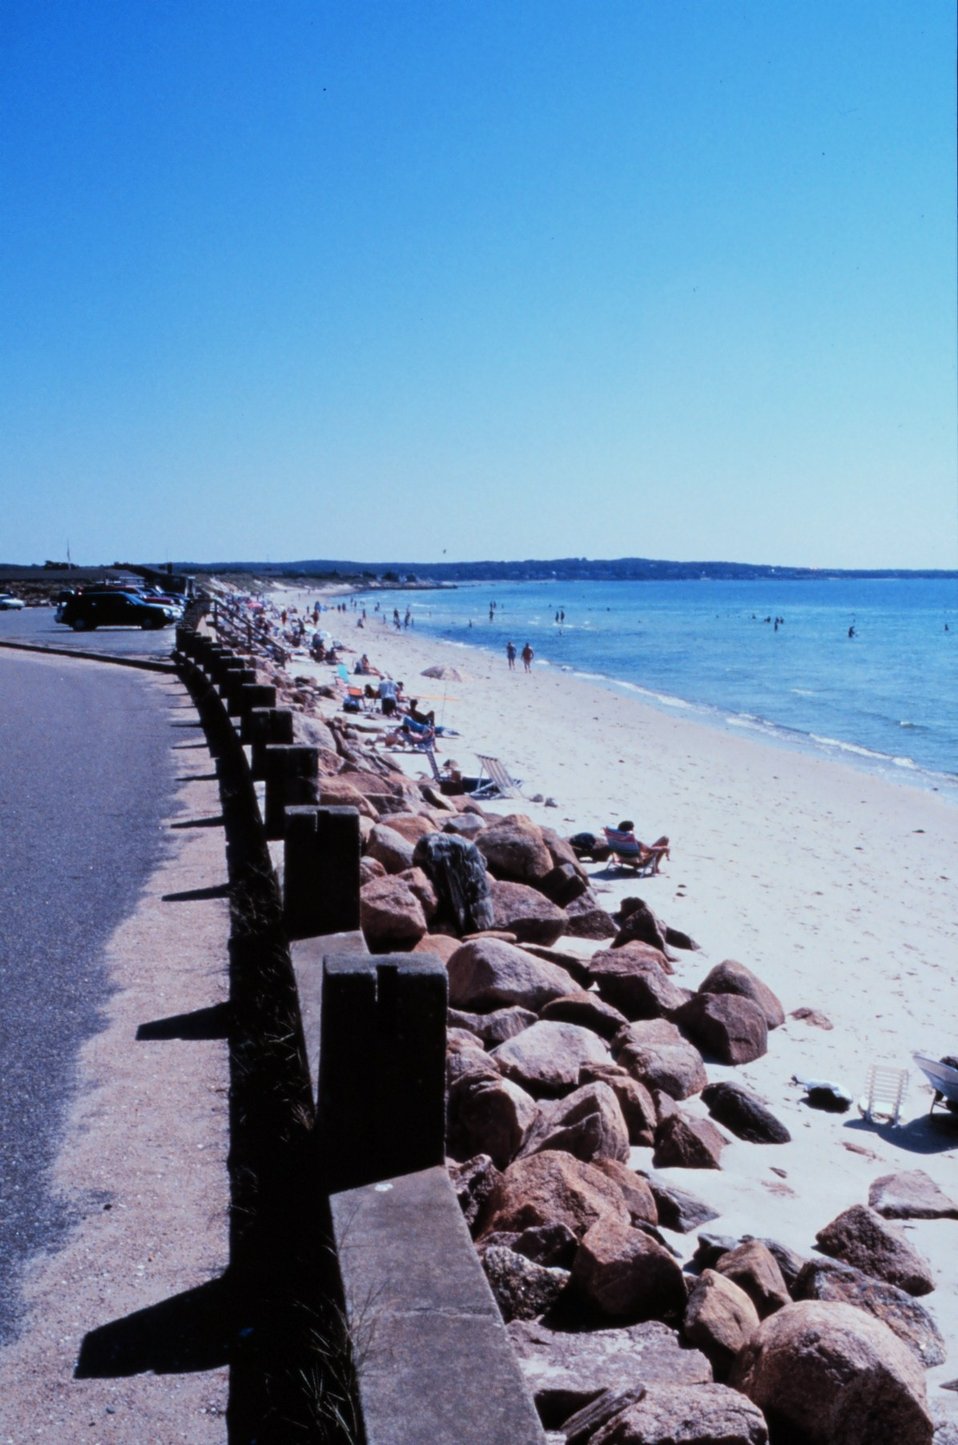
Chapaquoit Beach, West Falmouth